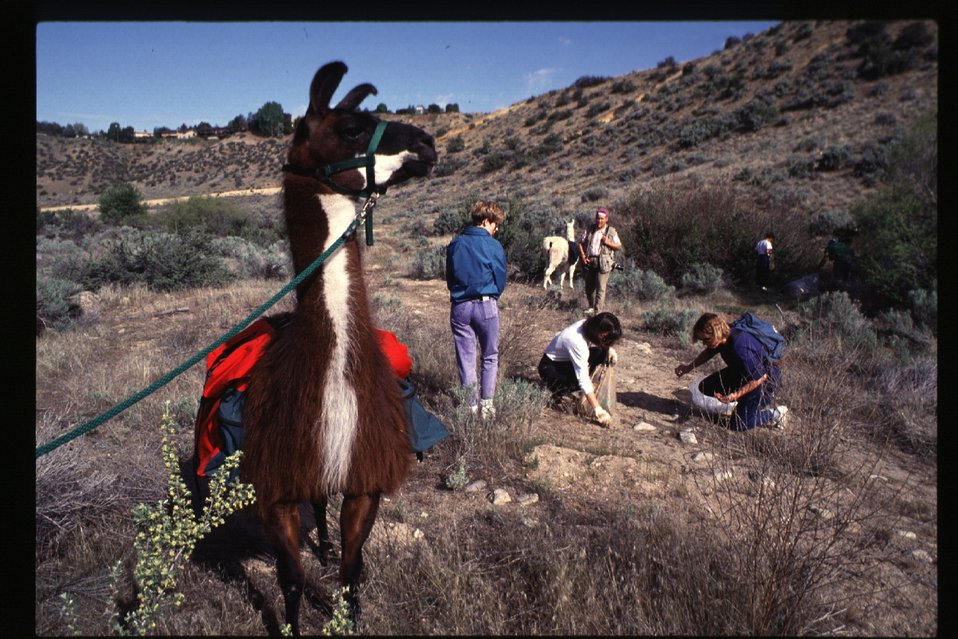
Rangeland and environmental education Boise Front Tending our Foothills Litter pickup Lamas Four Rivers Field Office LSRD Lower Snake River District